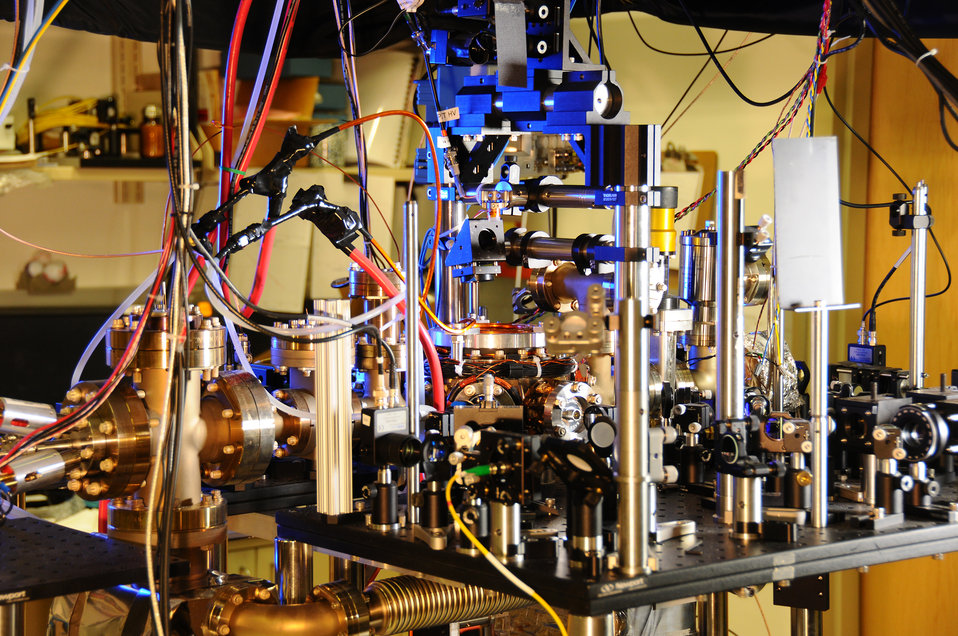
Ytterbium Lattice Atomic Clock

NIST's ultra-stable ytterbium lattice atomic clock. Ytterbium atoms are generated in an oven (large metal cylinder on the left) and sent to a vacuum chamber in the center of the photo to be manipulated and probed by lasers. Laser light is transported to the clock by five fibers (such as the yellow fiber in the lower center of the photo).